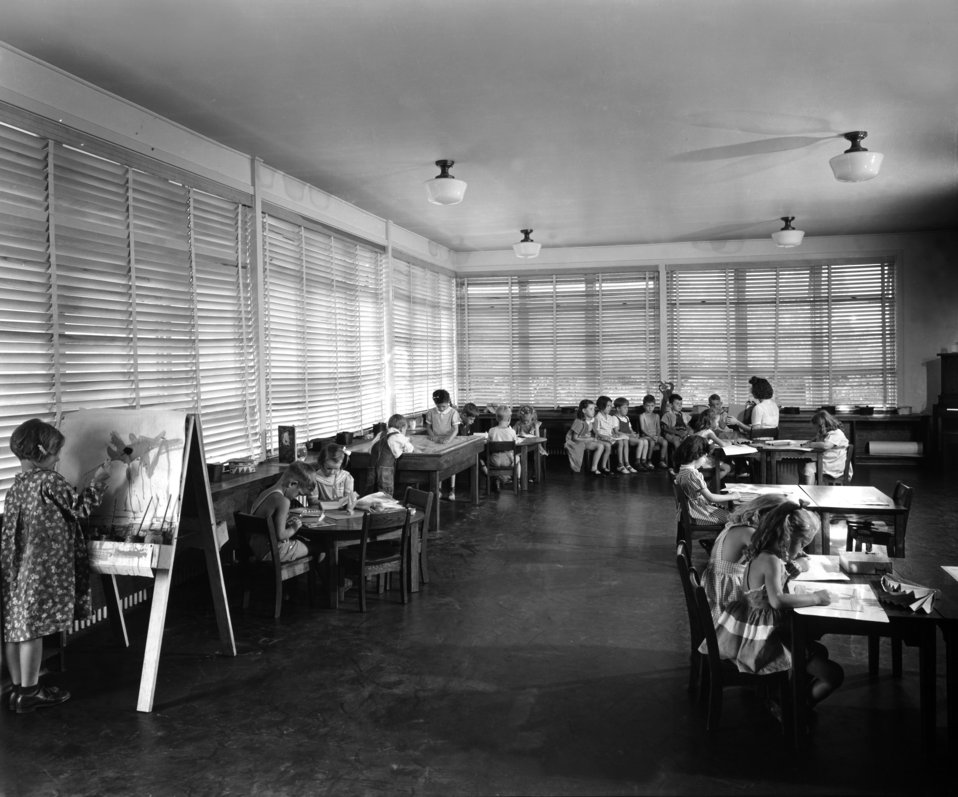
Elementary School - Art Class Oak Ridge

MED152 DOE photo by Ed Westcott
Elementary School - Art Class Oak Ridge Tennessee 1944